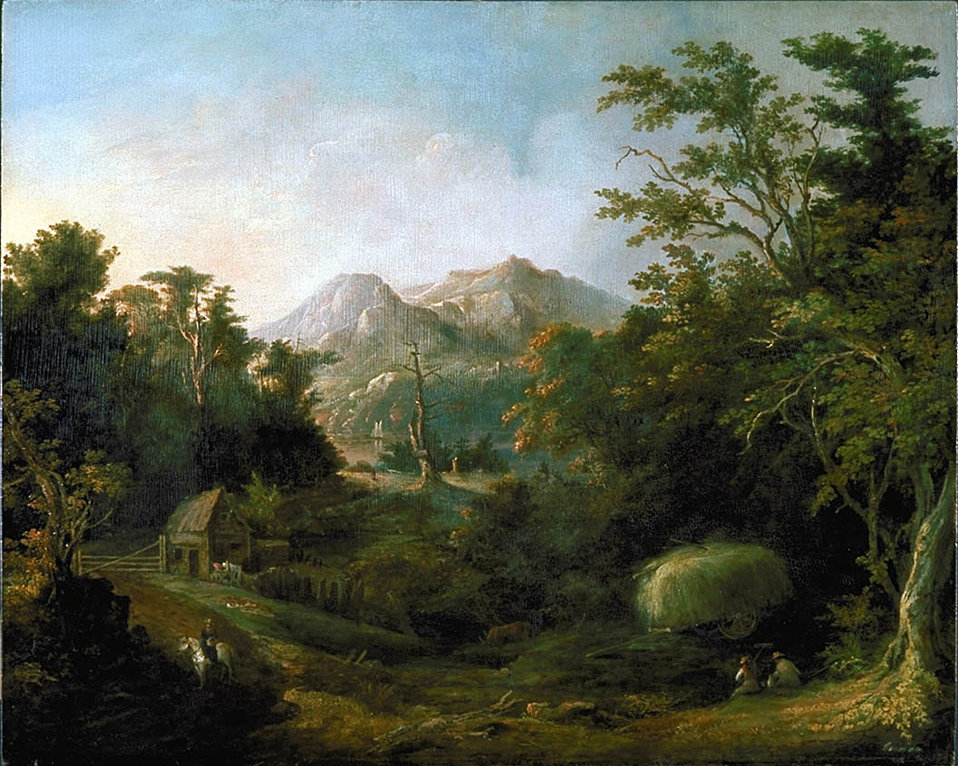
'Landscape with Farm and Mountains', Charles Codman, 1832